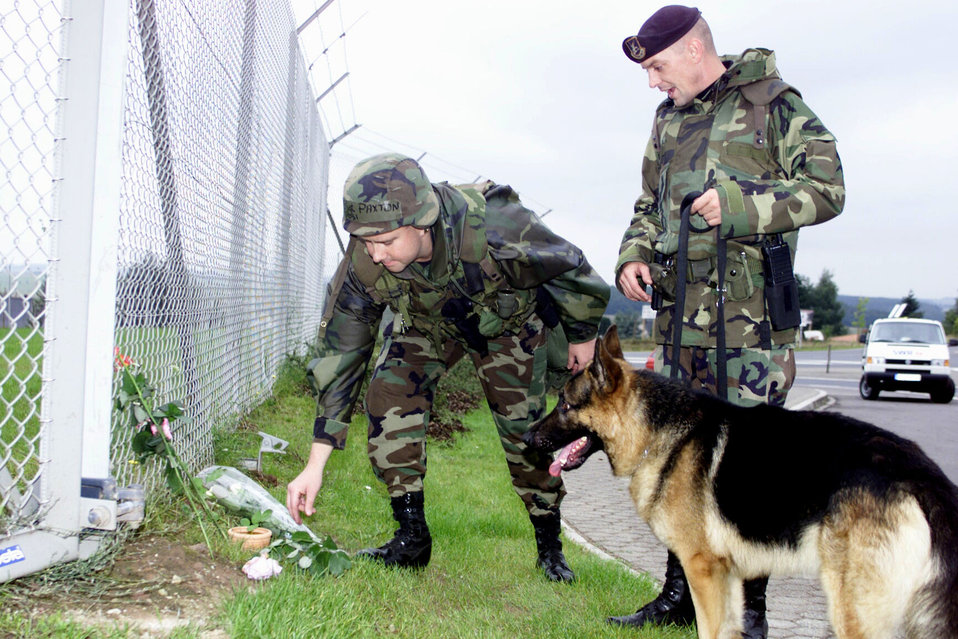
Makeshift memorial

SPANGDAHLEM AIR BASE, Germany -- Tech. Sgt. Micheal Ellis, Staff Sgt. Micheal T. Socey and his military working dog, 52nd Security Forces Squadron, place a rose given to them by German civilians at a makeshift memorial at the front gate of Spangdahlem Air Base, Germany, Sept. 12. The memorial is for American lives lost in the terrorist attacks on New York City and Washington D.C., Sept. 11.